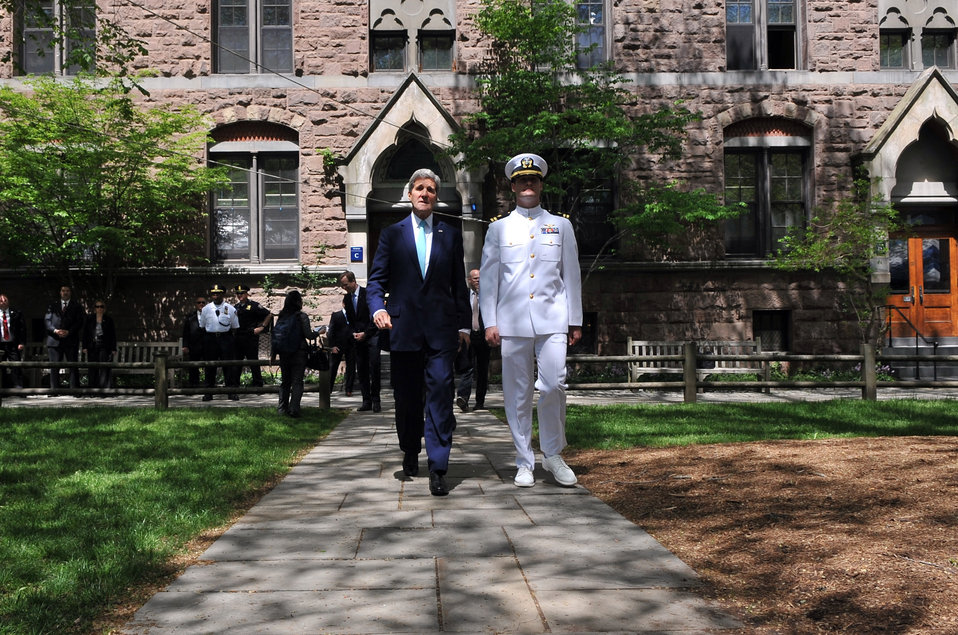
Secretary Kerry Escorted by Navy Lieutenant For Class Day Speech

U.S. Secretary of State John Kerry, who joined the Navy even before graduating from Yale University in 1966, is escorted by Navy Lieutenant Josh Parsons as he arrives to deliver Class Day remarks upon his return to the campus in New Haven, Connecticut, on May 18, 2014.